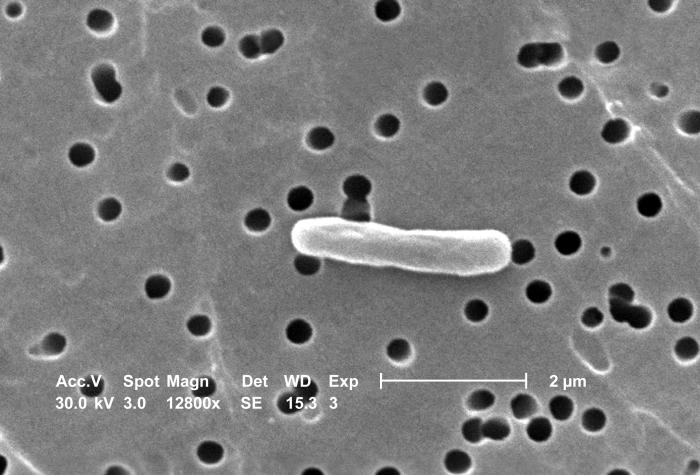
This scanning electron micrograph (SEM) depicts a highly magnified view of a rod-shaped Escherichia coli bacterium; Magnification 12800x.